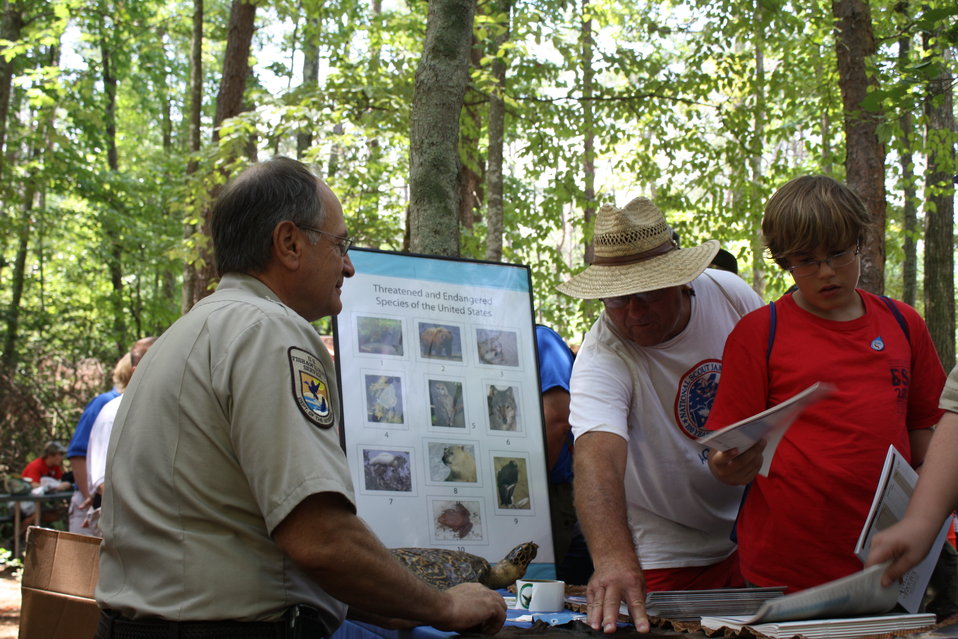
Boy Scout Jamboree 2010